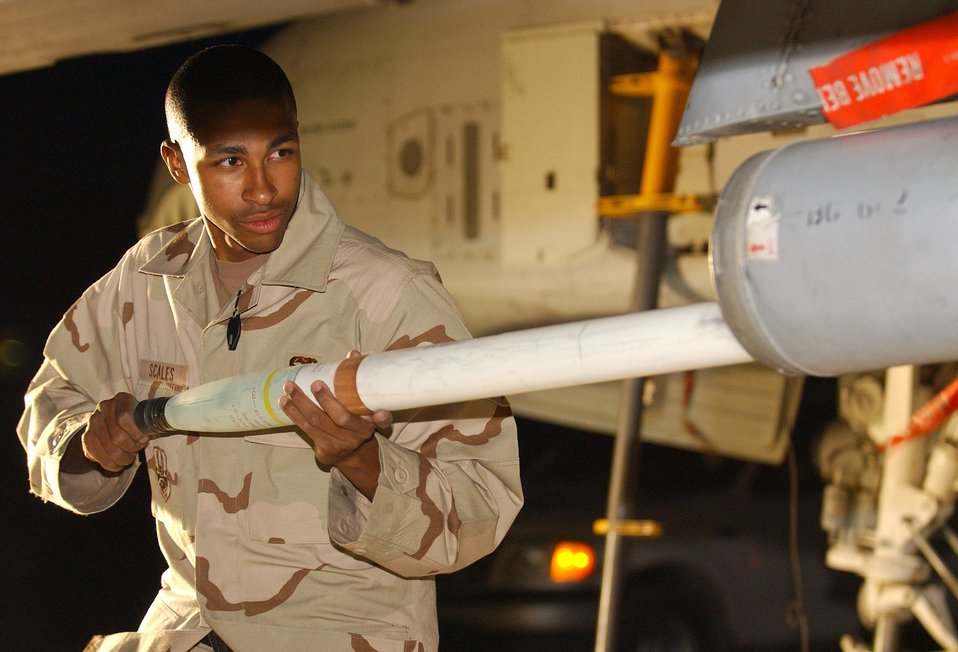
Putting 'thunder' in A-10

BAGRAM AIR BASE, Afghanistan -- Senior Airman Sterling Scales loads rockets into a rocket launcher attached to an A-10 Thunderbolt II here. A-10s support close-air support missions for ground forces. Airmen Sterling is a weapons loader with the 455th Expeditionary Aircraft Maintenance Squadron and is deployed from Pope Air Force Base, N.C.